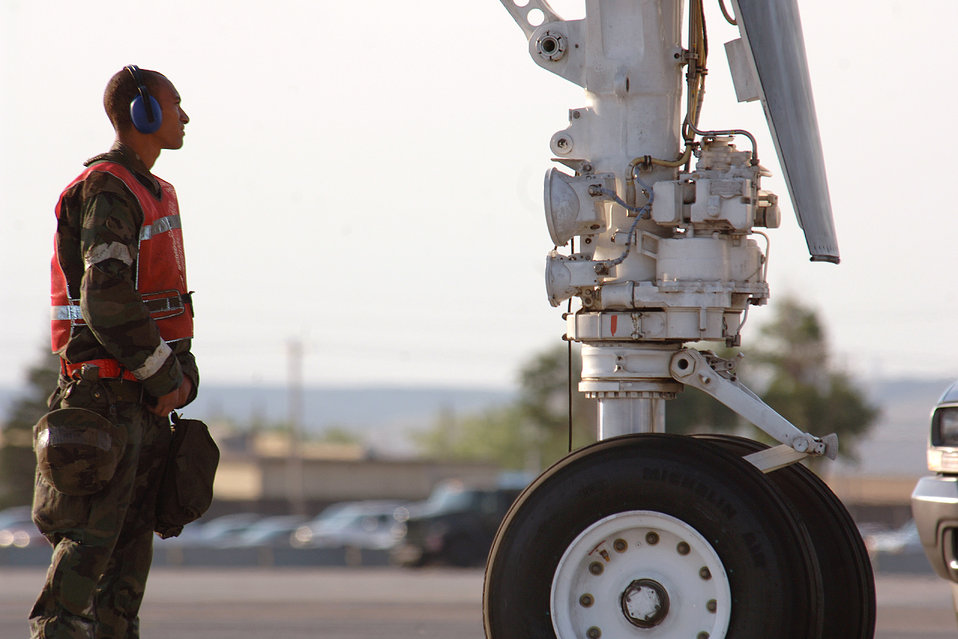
Routine checkup

Staff Sgt. Bulley Leighton performs a routine check on a B-1 Lancer during an operational readiness inspection at Ellsworth Air Force Base, S.D., on July 18. Pre-checks include avionics, control surfaces and engine runs. Sergeant Leighton is assigned to the 28th Aircraft Maintenance Squadron.